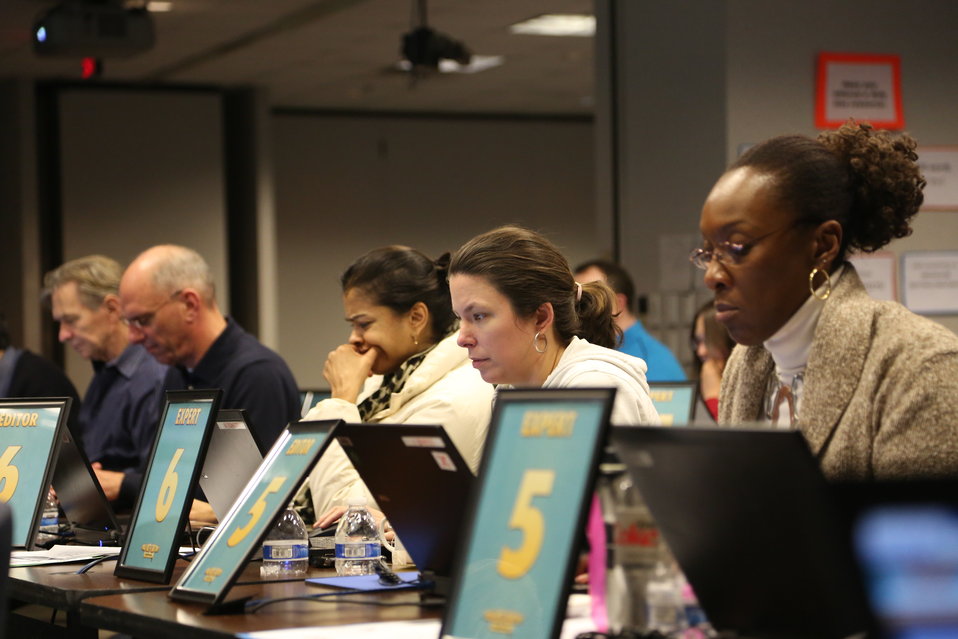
NDFW Chat Day 2014

Chat Day Event held by the National Institute on Drug Abuse during its National Drug Facts Week Jan. 27-Feb. 2, 2014. Scientists from NIDA and other agencies answered questions about drugs from teens around the world on Jan. 29th in Rockville, Maryland.